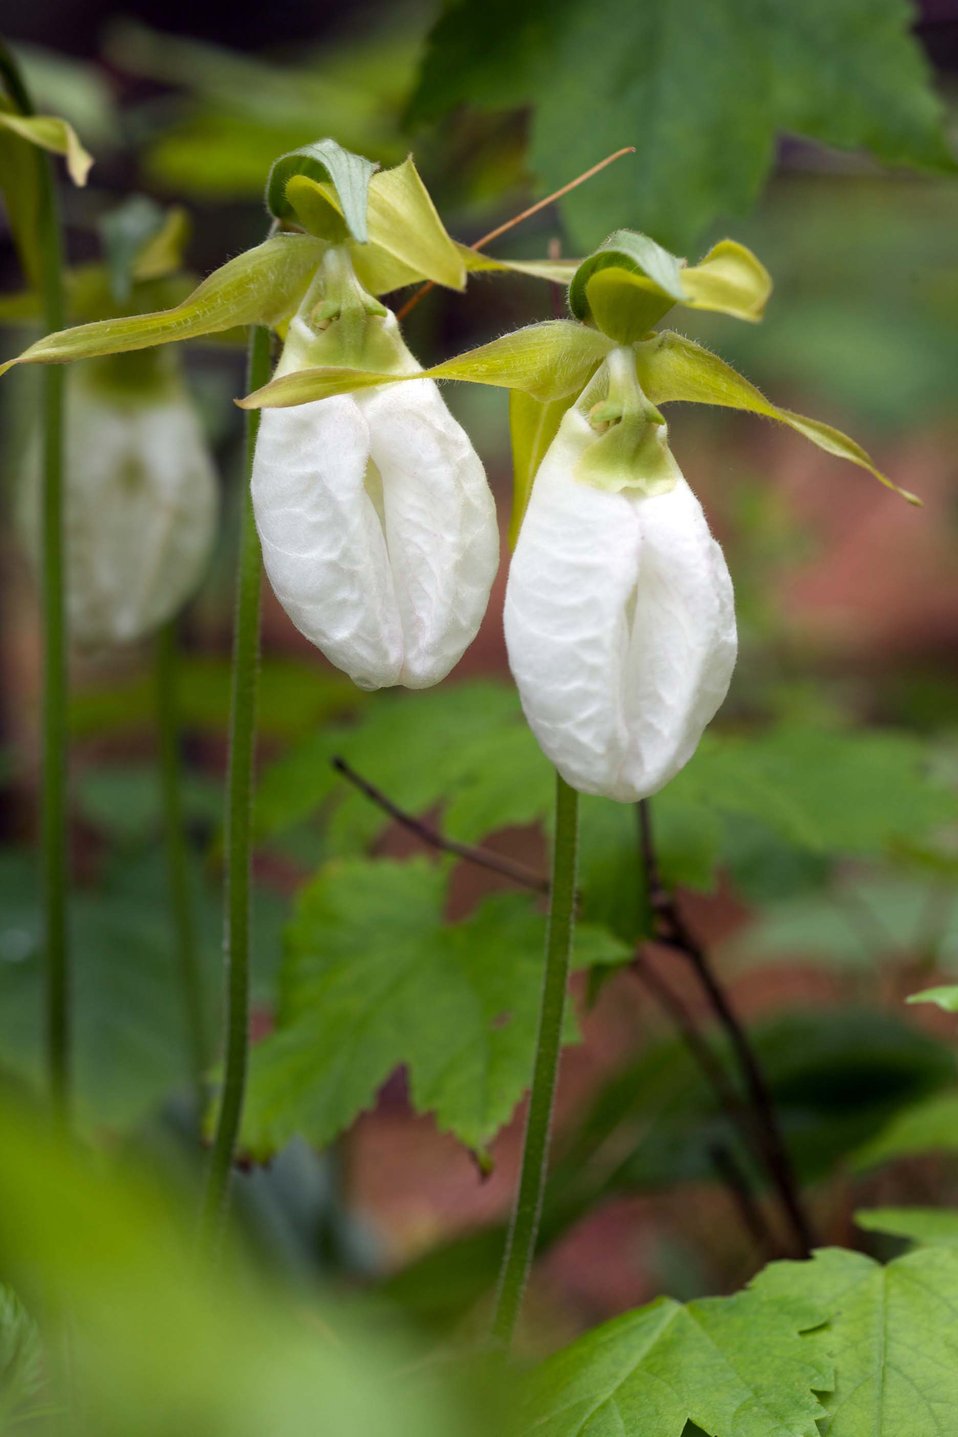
Lady Slippers

Nulhegan Basin Division, Silvio O. Conte National Wildlife Refuge.